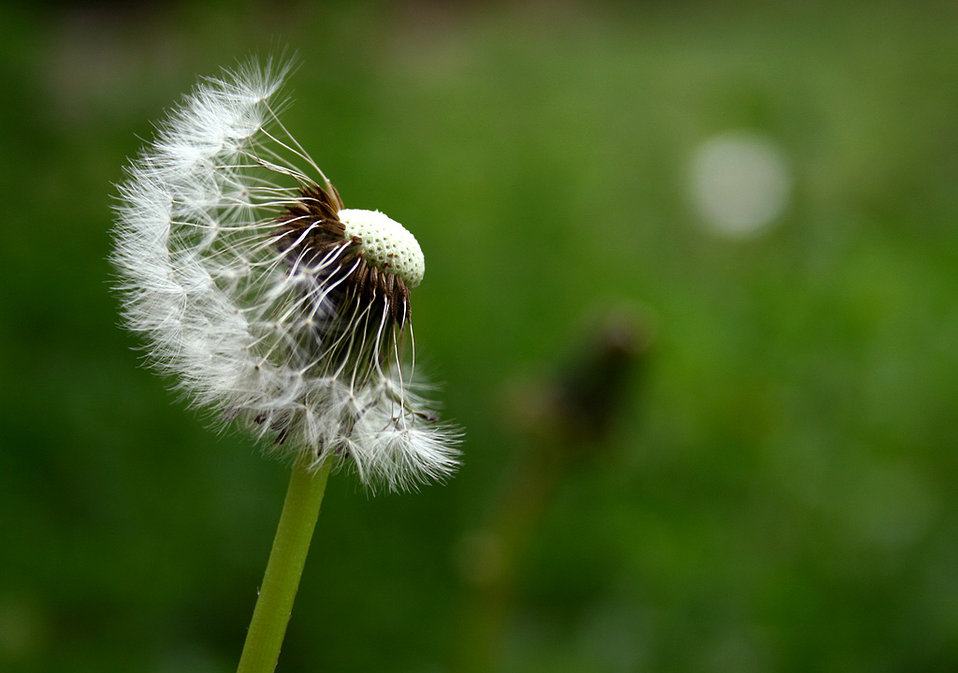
Dandelion seedhead